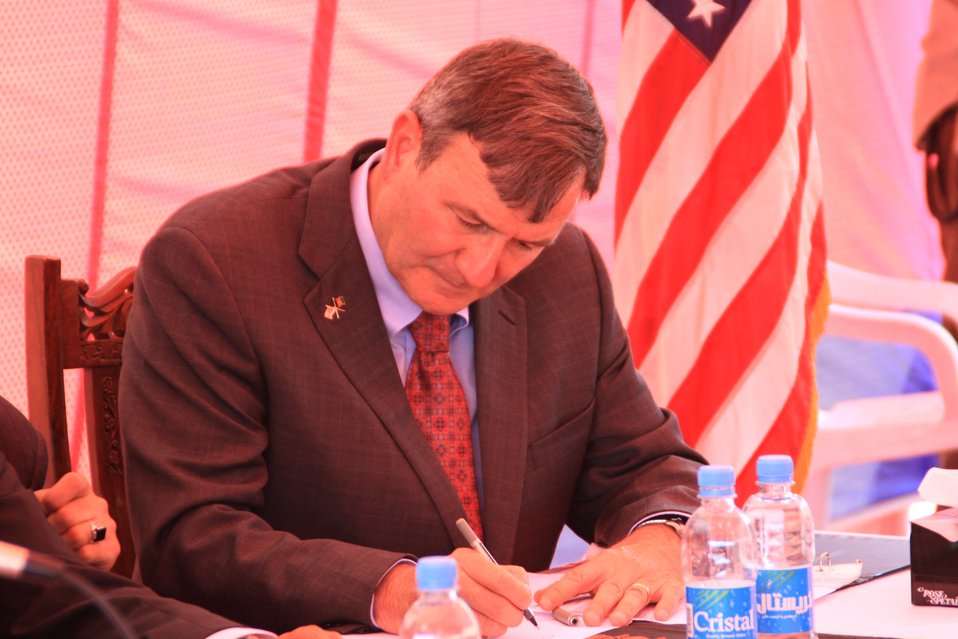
Badam Bagh Farm